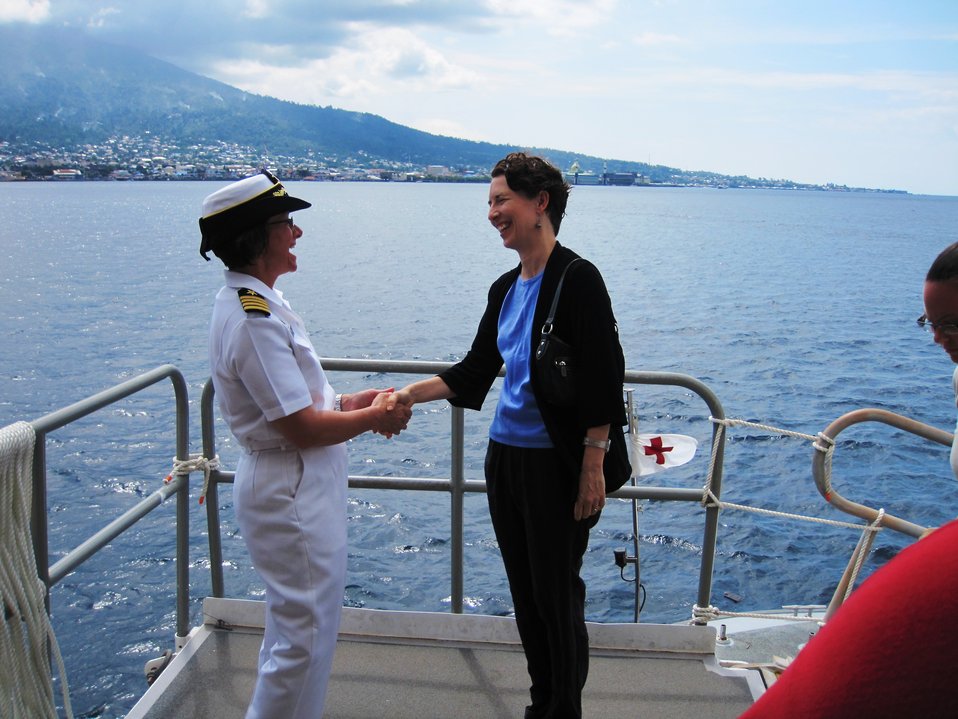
PP2010 Commander Capt. Franchetti Shakes Hands With U.S. Consul General Bauer

Pacific Partnership 2010 Commander Capt. Lisa Franchetti shakes hands with U.S. Consul General in Surabaya Kristen Bauer aboard the USNS Mercy during Pacific Partnership 2010's visit to Ternate, Indonesia, on July 17, 2010.